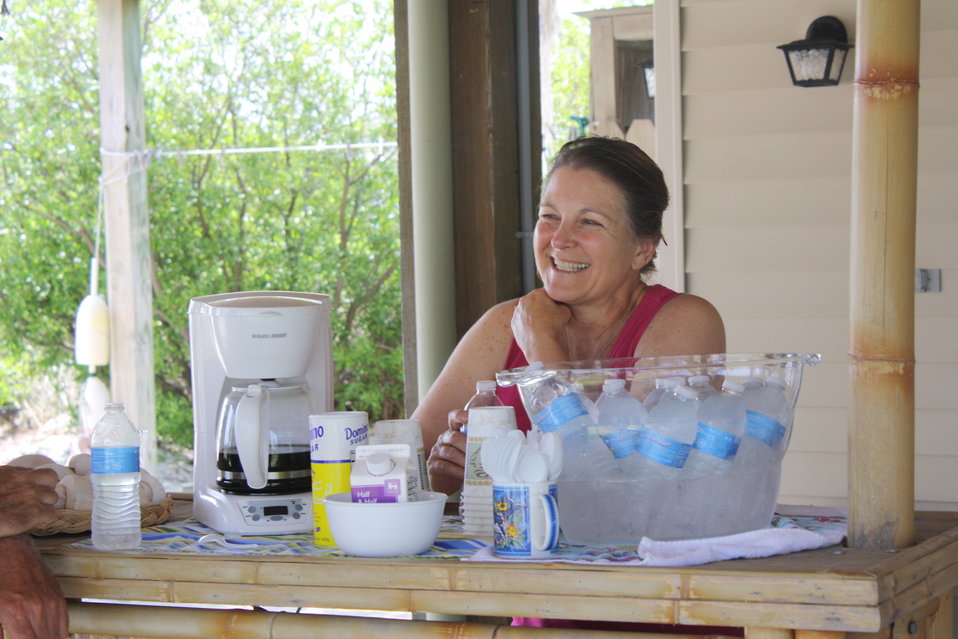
Bavon Beach project

Ms. Powell has lived on Bavon Beach since she was a child.